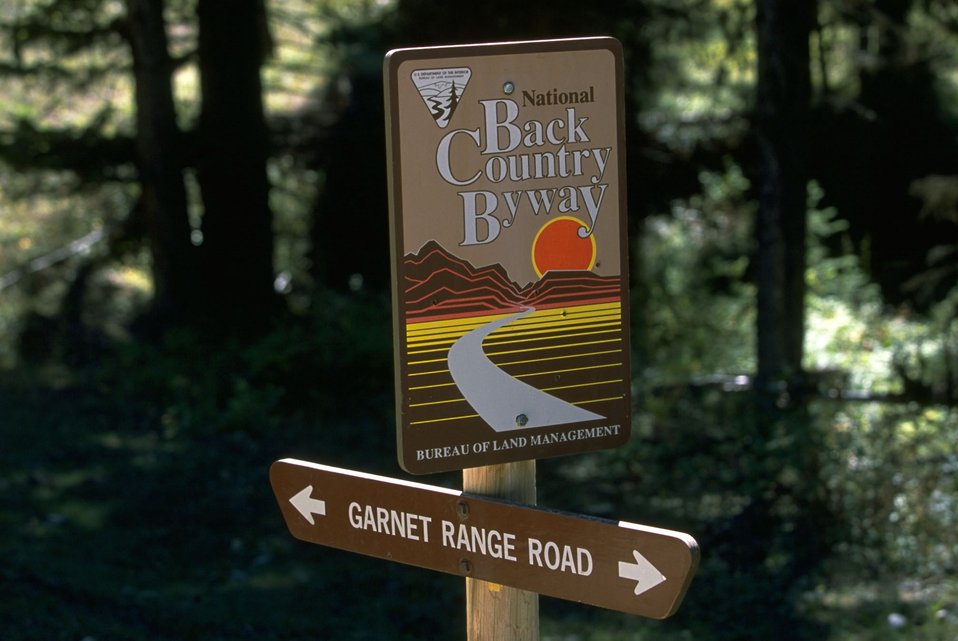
Directional sign on Garnet Back Country Byway